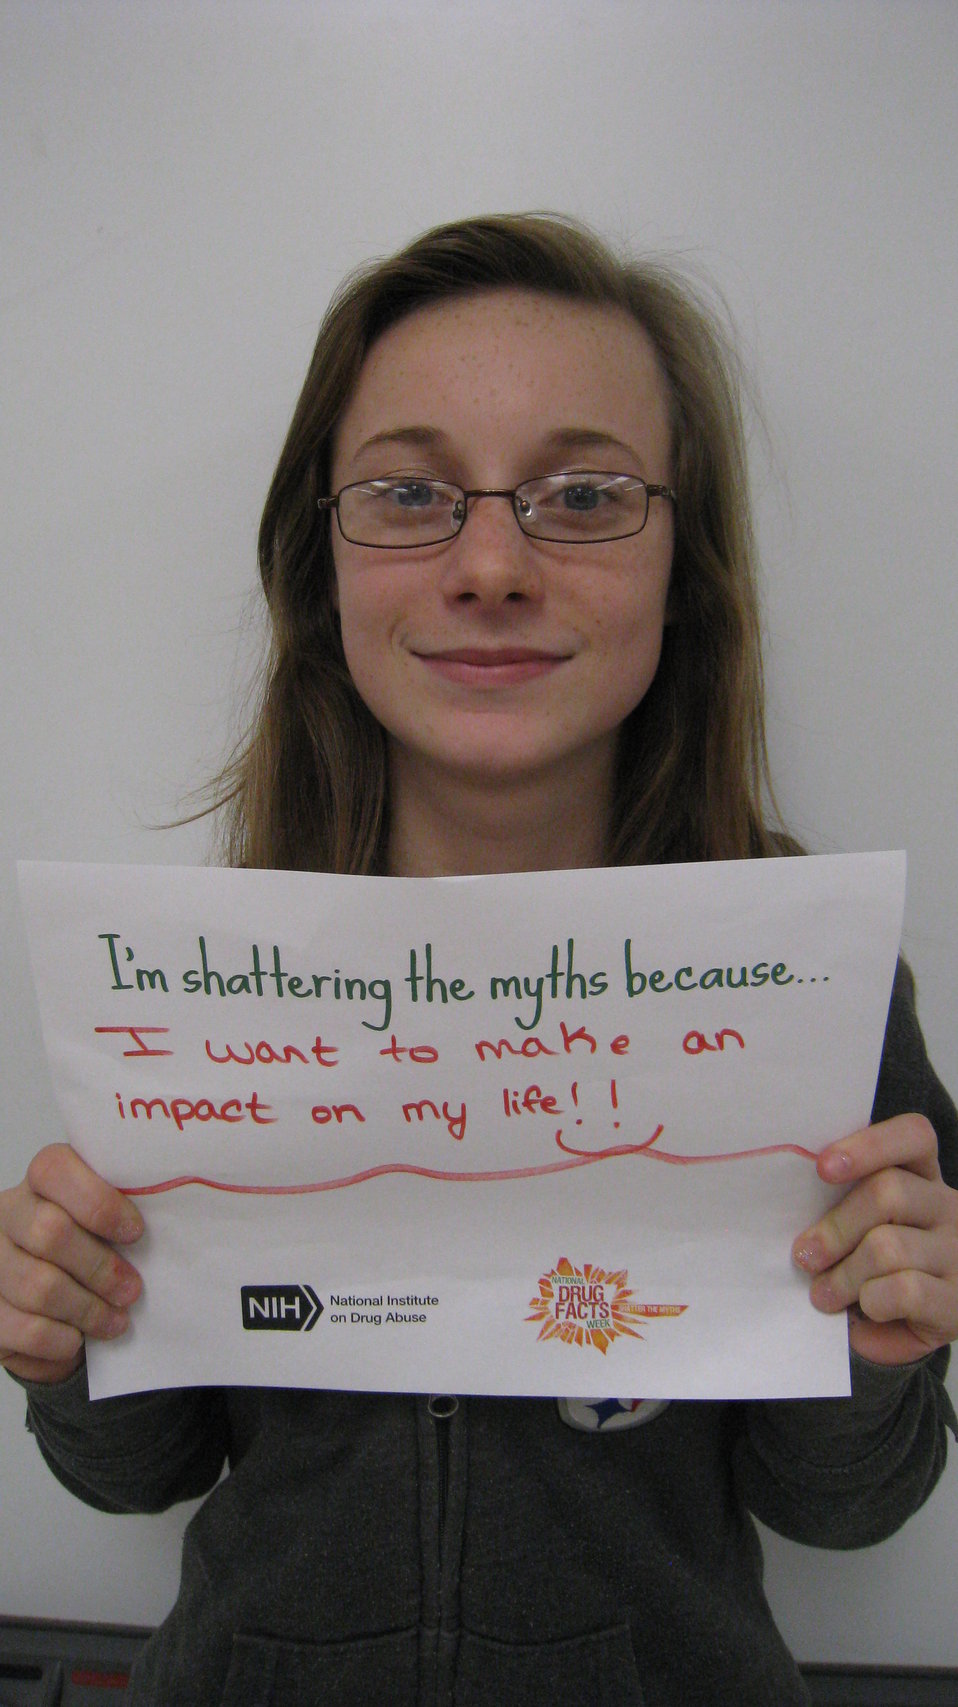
Teenagers from the Van Buren County SAFE Coalition's, Youth Leadership Council (YLC) in Keosauqua, Iowa participate in various events during National Drug Facts Week, 2014.